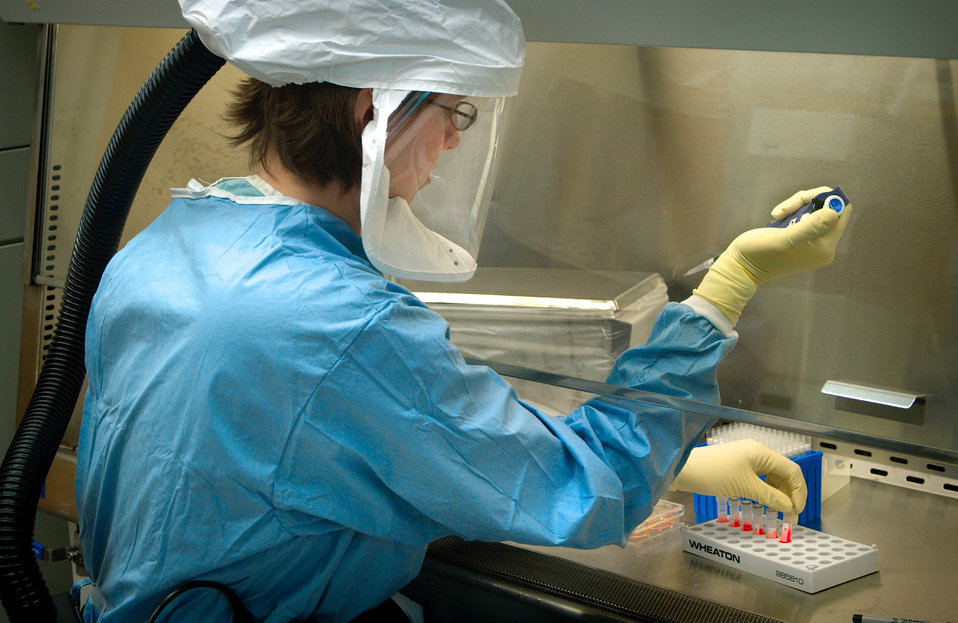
This photograph showed a CDC scientist as she was in the process of pipetting specimens in one of the Center for Disease Control's (CDC) Biosafety Level-4 (BSL-4) laboratories, located in Atlanta, GA. This scientist was wearing a protective air-tight suit equipped with a helmet and face mask. She was seated at a negatively-pressurized laminar flow hood that allowed no air flow to escape back into the lab environment. Using this negatively pressurized, hooded environment any airborne pathogens, or toxic vapors are drawn back into the hooded container, and up into a filtered ventilation system, thereby, avoiding the spread of contaminants through the laboratory.